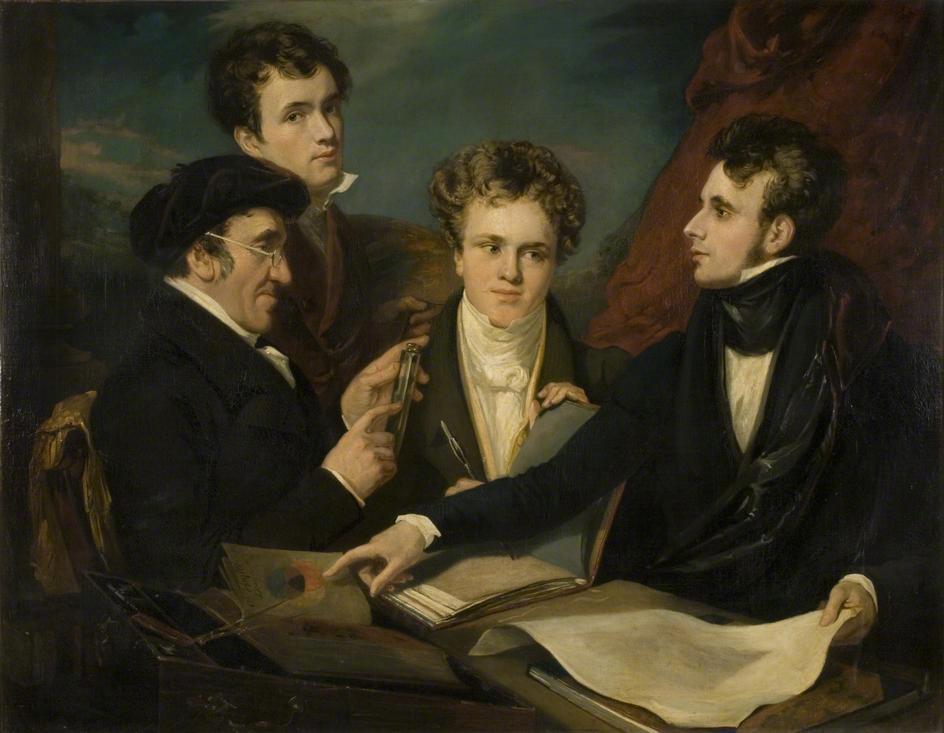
A Controversy on Colour by John Hayter enlg